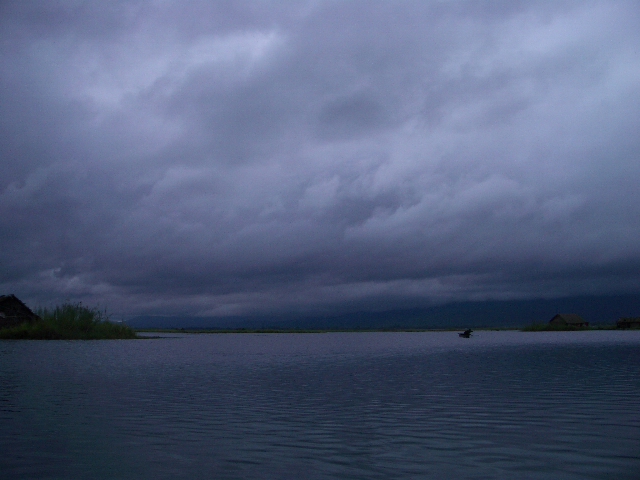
Uploaded by request of Snehasis Das

Taken at Loktak Lake, Manipur, India

In search for clean environment